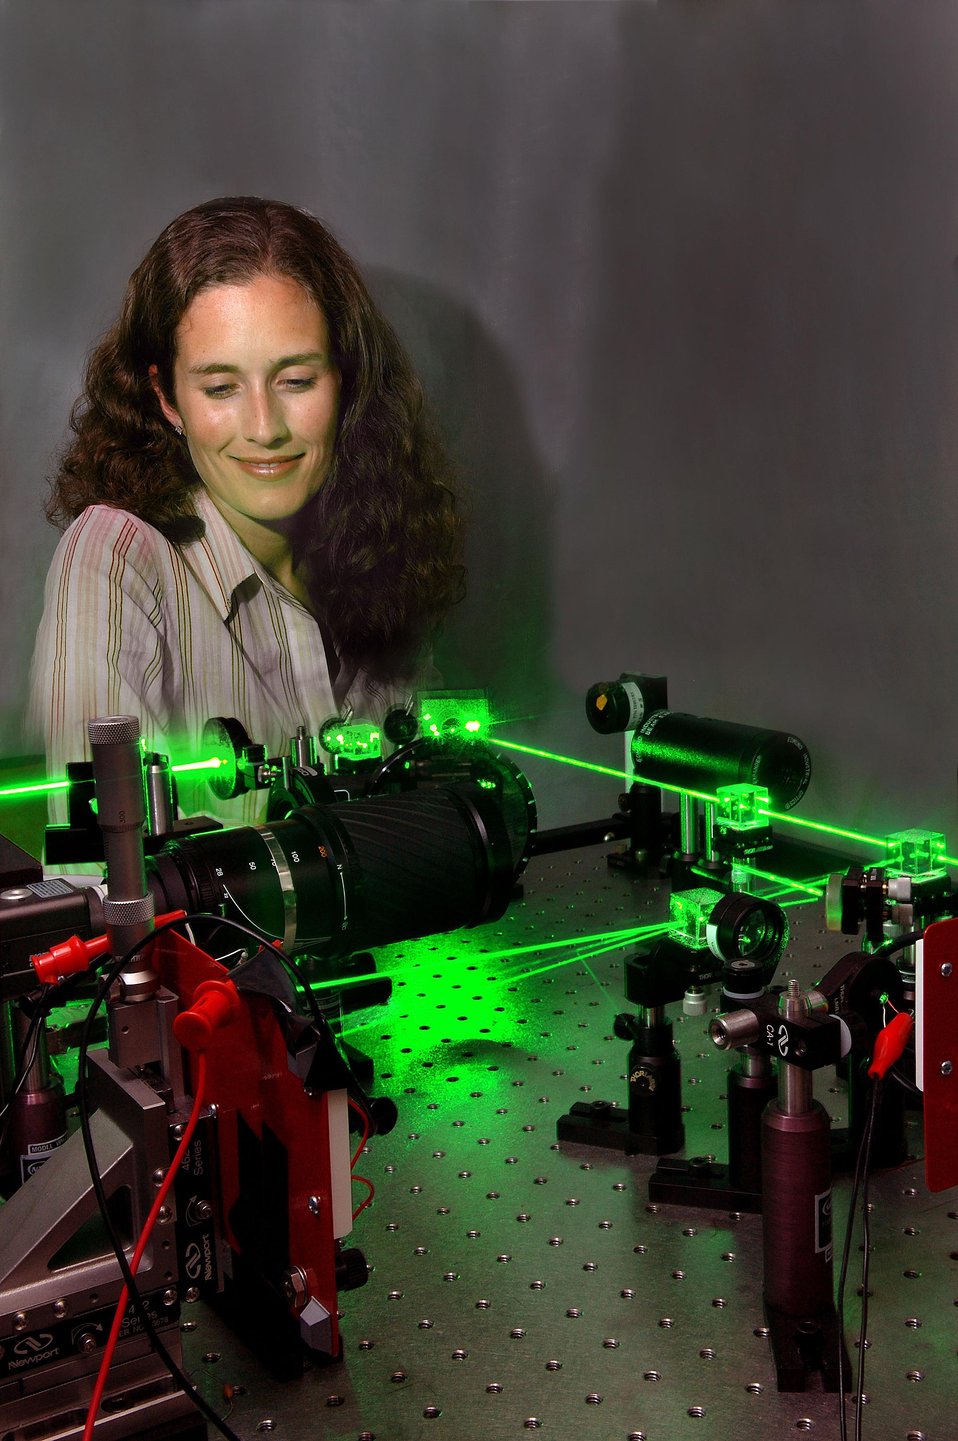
SMALL HANDHELD MOTION DETECTOR, DEVELOPED AT SANDIA, IS ONE THOUSAND TIMES MORE SENSITIVE THAN ANY TOOL THUS FAR.

VERY FINE MOTION, FORMERLY UNOBSERVABLE BY THE HUMAN EYE CAN NOW BE STUDIED BY USING AN UNUSUAL DIFFRACTION GRATING FABRICATED BY SNL'S MEMS (MICRO-ELECTRONIC MECHANICAL) APPLICATIONS.